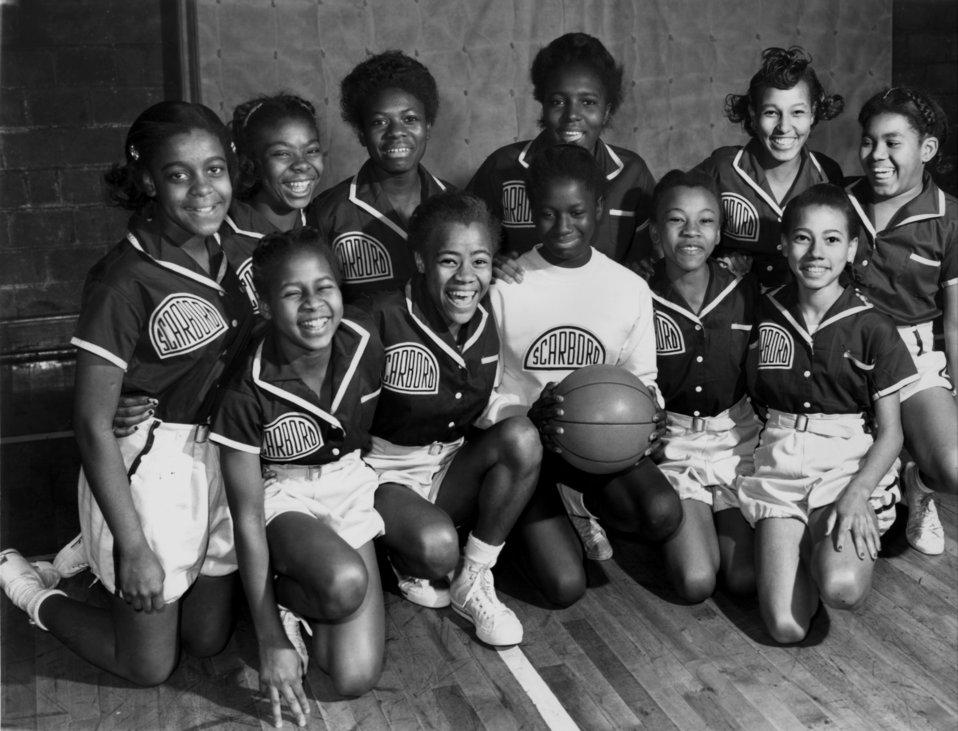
Scarboro girls basketball team Oak Ridge

4226 photo by Ed Westcott

Scarboro girls basketball team Oak Ridge Tennessee 1/1948